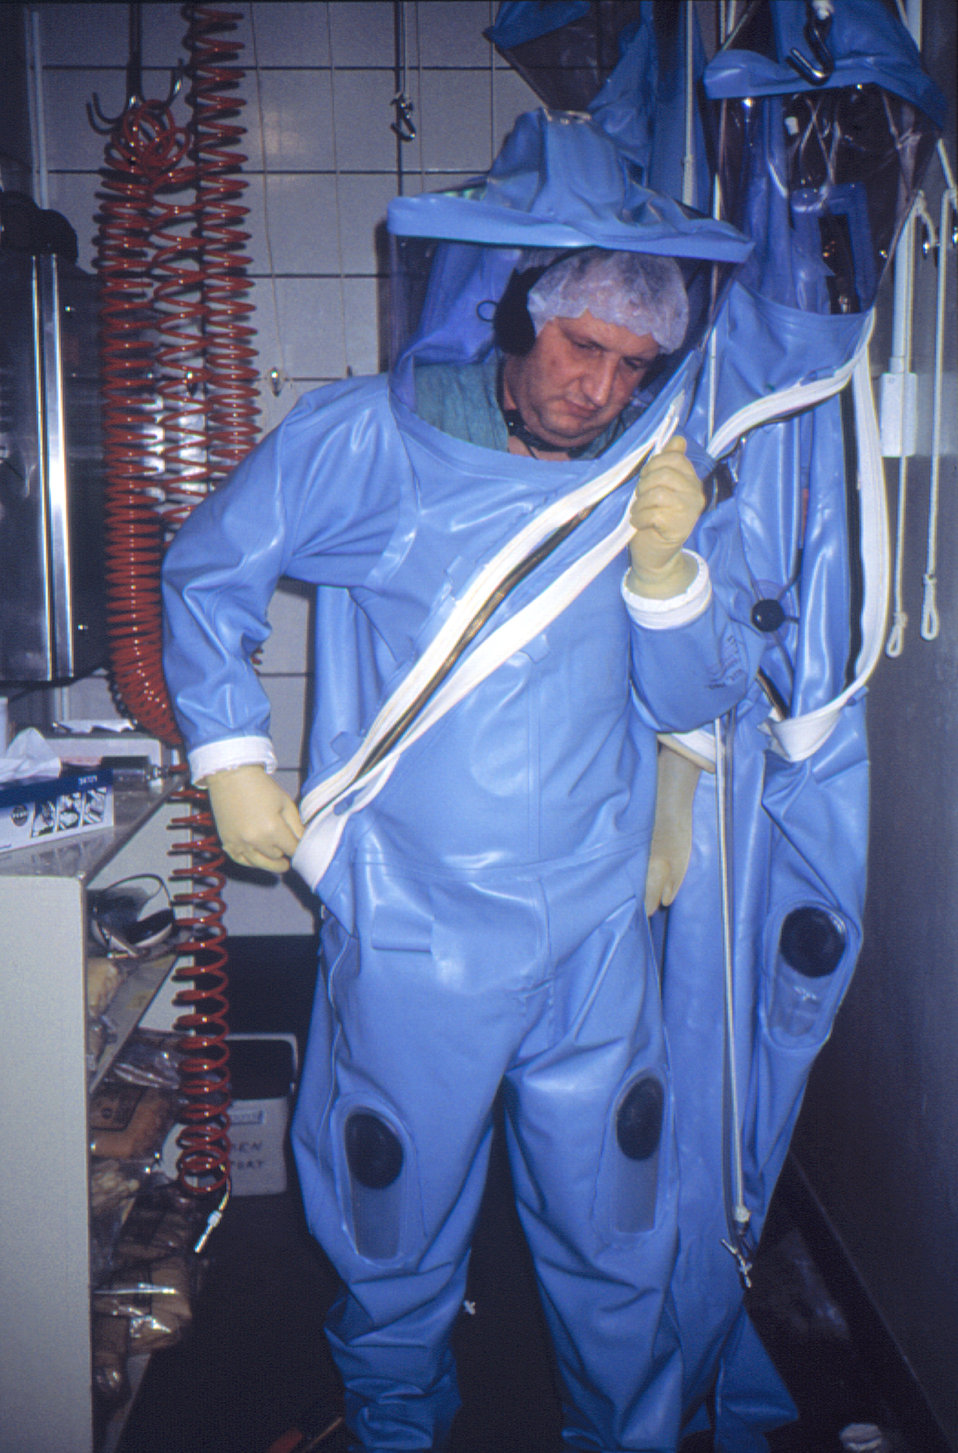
CDC scientist puts on a protective suit and face mask before entering Biosafety Level 4 laboratory (BSL-4), Atlanta, GA, USA.